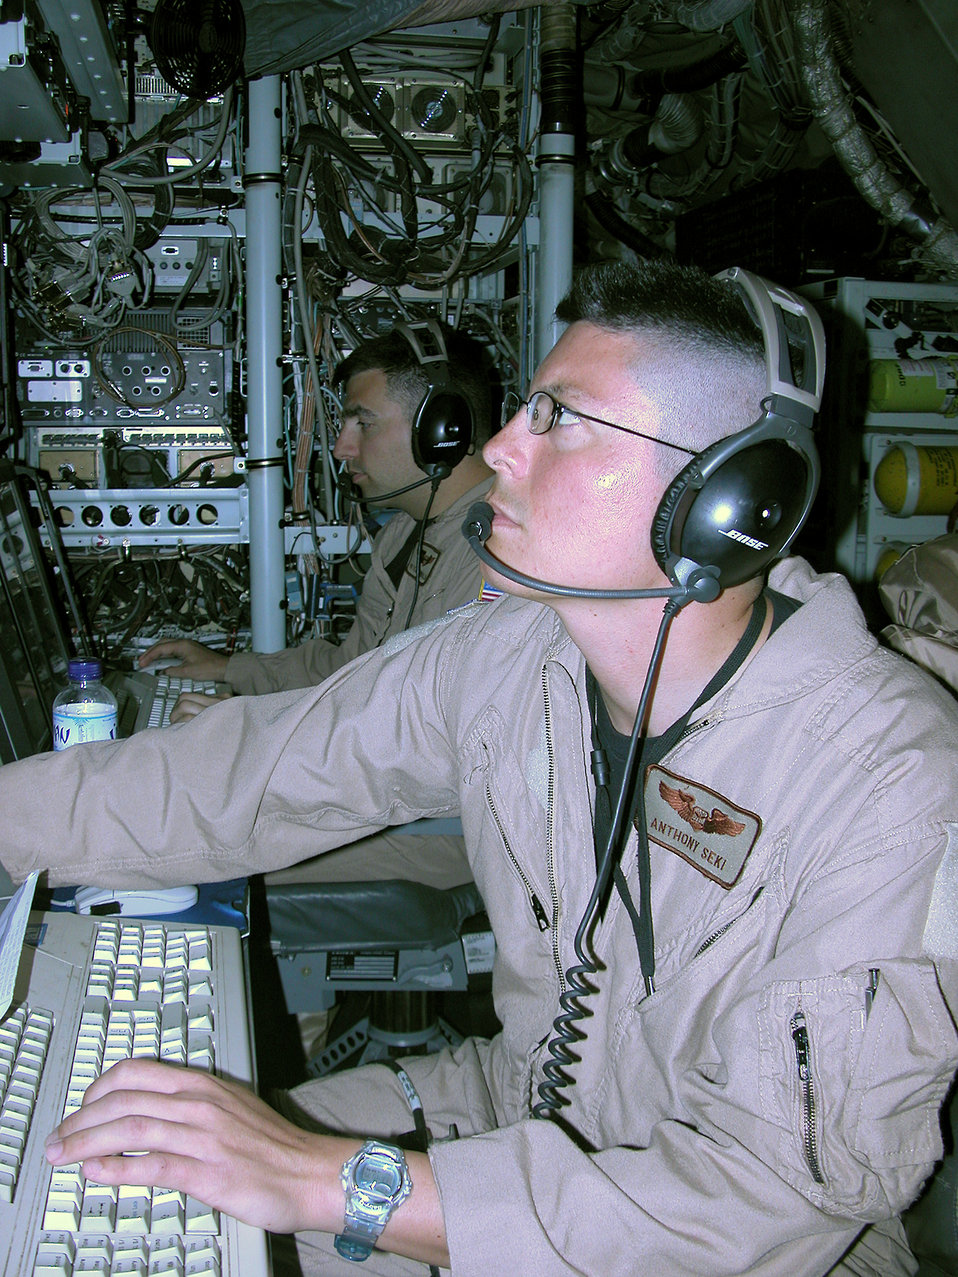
Airmen keep a step ahead of enemy

Capt. Anthony Seki, an electronic warfare officer, keeps a watchful eye during a mission April 4 on a RC-135 V/W Rivet Joint. Captain Seki is assigned to the 763rd Expeditionary Reconnaissance Squadron in Southwest Asia. The 763rd ERS mission is to provide real time on-scene intelligence collection, surveillance and analysis to forces in the air and on the ground.